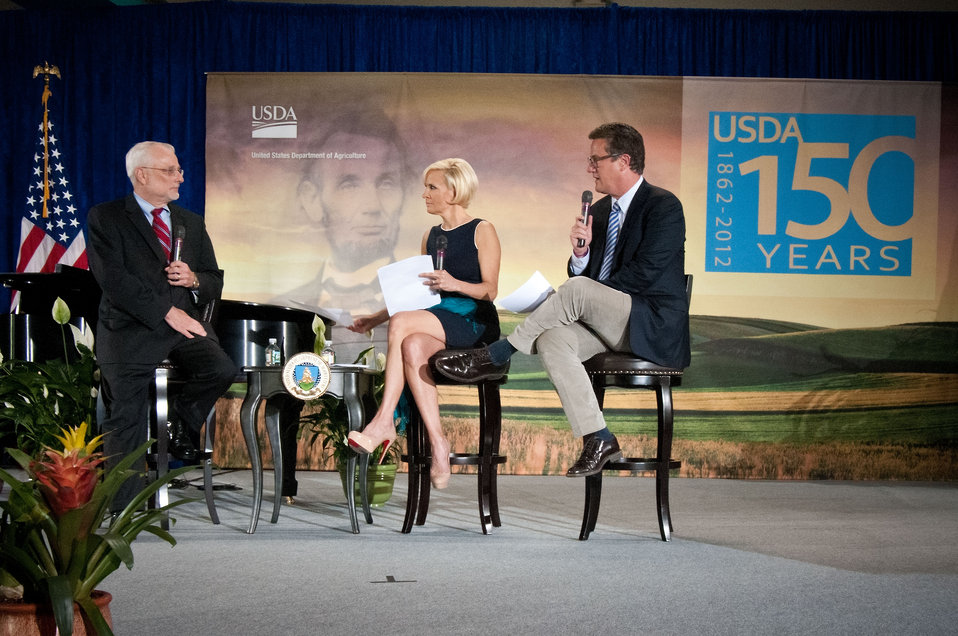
From left: Dave White, Chief, Natural Resource Conservation Service, Mika Brzezinski and Former Congressman Joe Scarborough (R-Fla.) hosts of MSNBC’s “Morning Joe and masters of ceremony listen to Chief White discuss the Deepwater Horizon Oil spill and the wide spread drought in the Southern United States that impacted over 50 million migratory birds at the United States Department of Agriculture's 150th Anniversary celebration in Washington, D.C., on Tuesday, May 15, 2012.